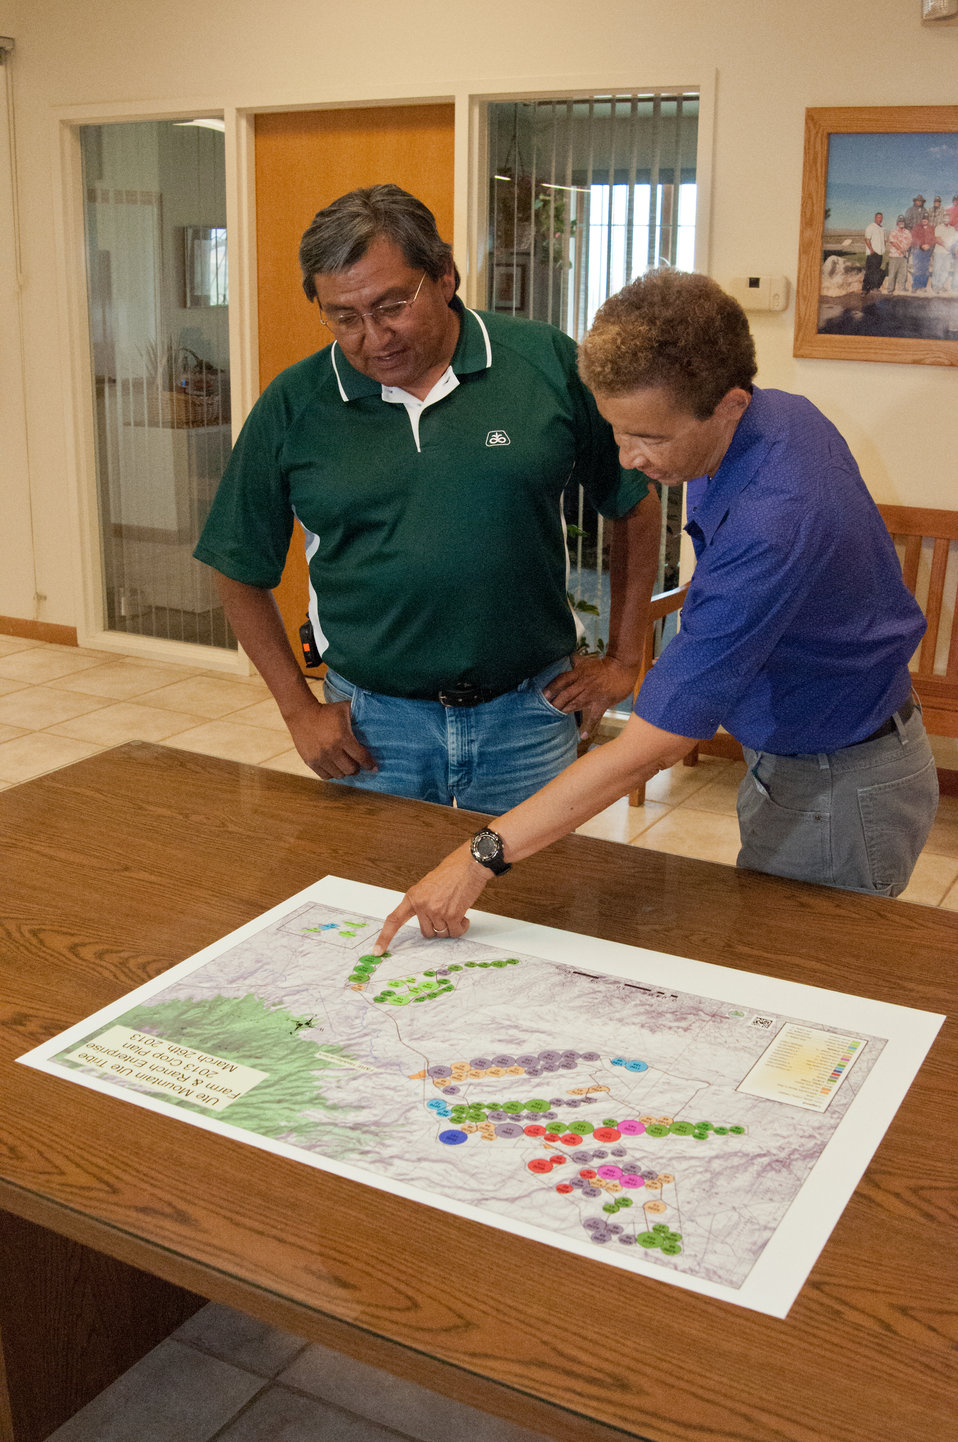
Ute Mountain Ute Tribal Member Eric Whyte and U.S. Department of Agriculture (USDA) Regional StrikeTeam Coordinator Sharon Nance review the Ute Mountain Ute Tribe Farm and Ranch Enterprise Crop Plan topographic map showing crop acreage on Thursday, Jun. 13, 2013. With the help of a grant from the USDA’s Rural Development (RD) agency, the enterprise is building a cleaning and bagging operation for corn products grown, cleaned and milled on the Ute Mountain Ute reservation and examining the market potential for producing milled corn. Such value-added products can be sold for a higher profit margin and require processing, which creates jobs on the reservation.